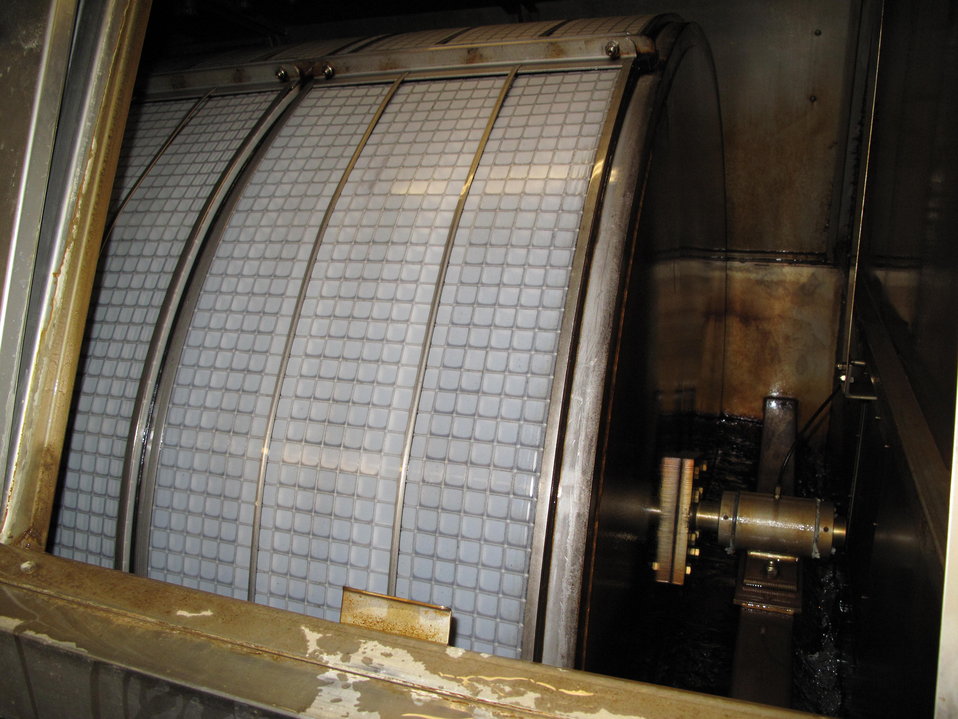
Filtration Systems

These filtrations systems are used to filter out agents that can potentially cause diseases (such as whirling disease) at Leadville National Fish Hatchery.